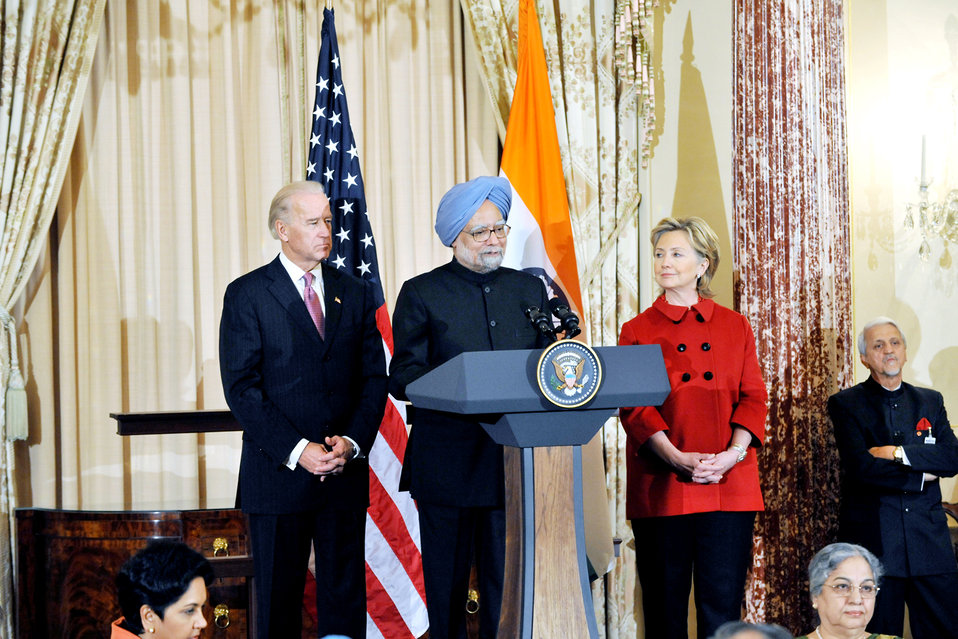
Vice-President Biden, Secretary Clinton Co-Host Social Lunch in Honor of Indian Prime Minister

U.S. Vice-President Joe Biden Dr. Jill Biden co-host a social lunch with U.S. Secretary of State Hillary Rodham Clinton in honor of Indian Prime Minister H.E. Dr. Manmohan Singh and Dr. Gurusharan Kaur at the U.S. Department of State in Washington, DC November 24, 2009.